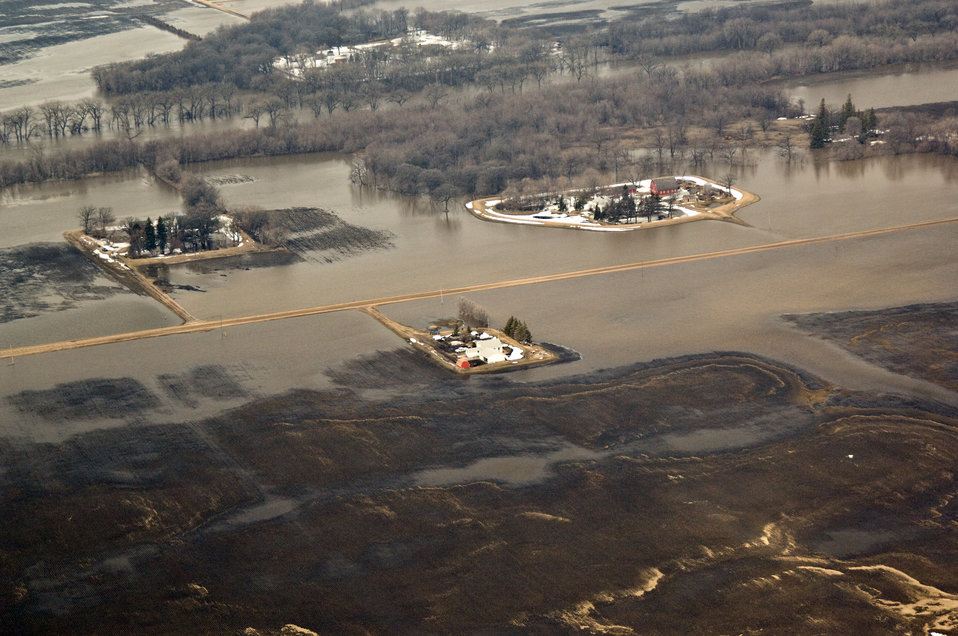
Farmland was under water in North Dakota on April 8, 2009 due to the Red and Missouri Rivers overflowing their banks. North Dakota received abnormally heavy winter snows atop saturated and frozen ground, which was already saturated when it froze at the beginning of winter, melting snow which could not be absorbed by the frozen ground, additional precipitation from a rain storm on March 22, 2009 and a late snowstorm at the end of the month added to the existing snowpack.